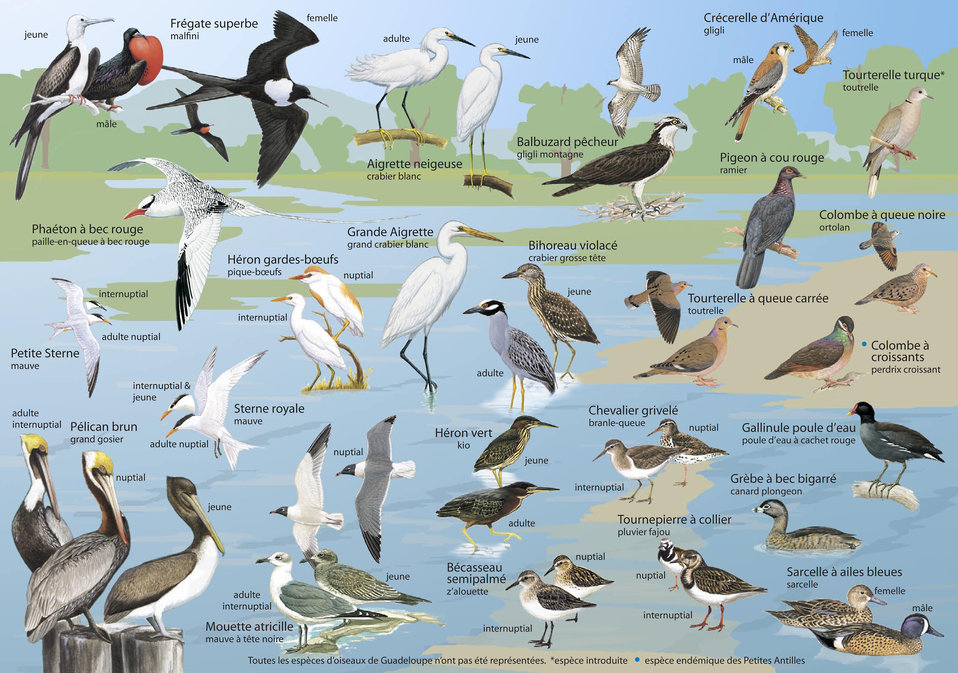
G234 2010 (1)

Identification guide for Birds of Guadeloupe, page 2.